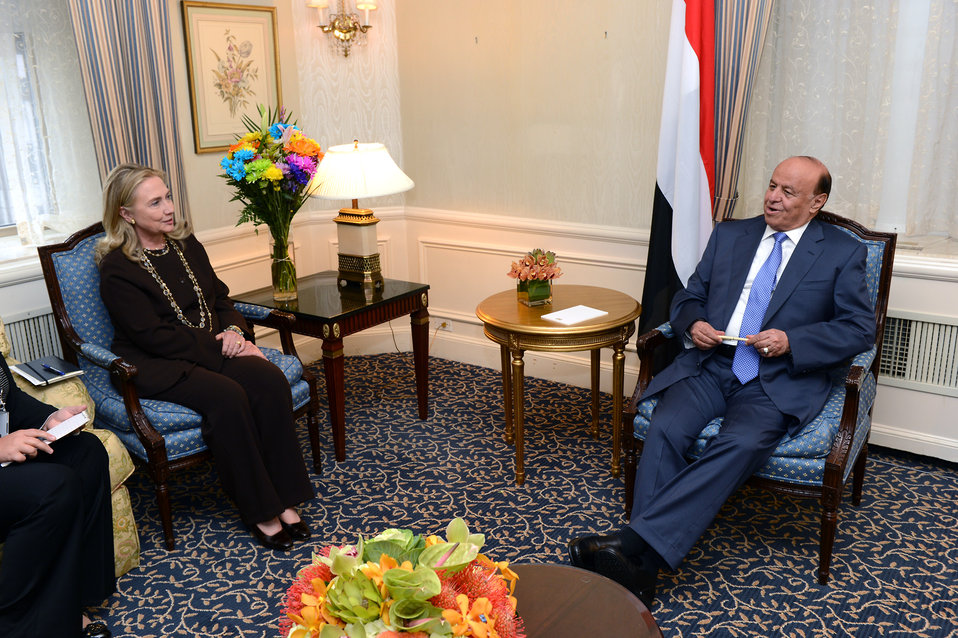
Secretary Clinton Meets With Yemeni President Hadi

U.S. Secretary of State Hillary Rodham Clinton meets with Yemeni President Abdo Rabo Mansour Hadi in New York, New York on September 25, 2012.